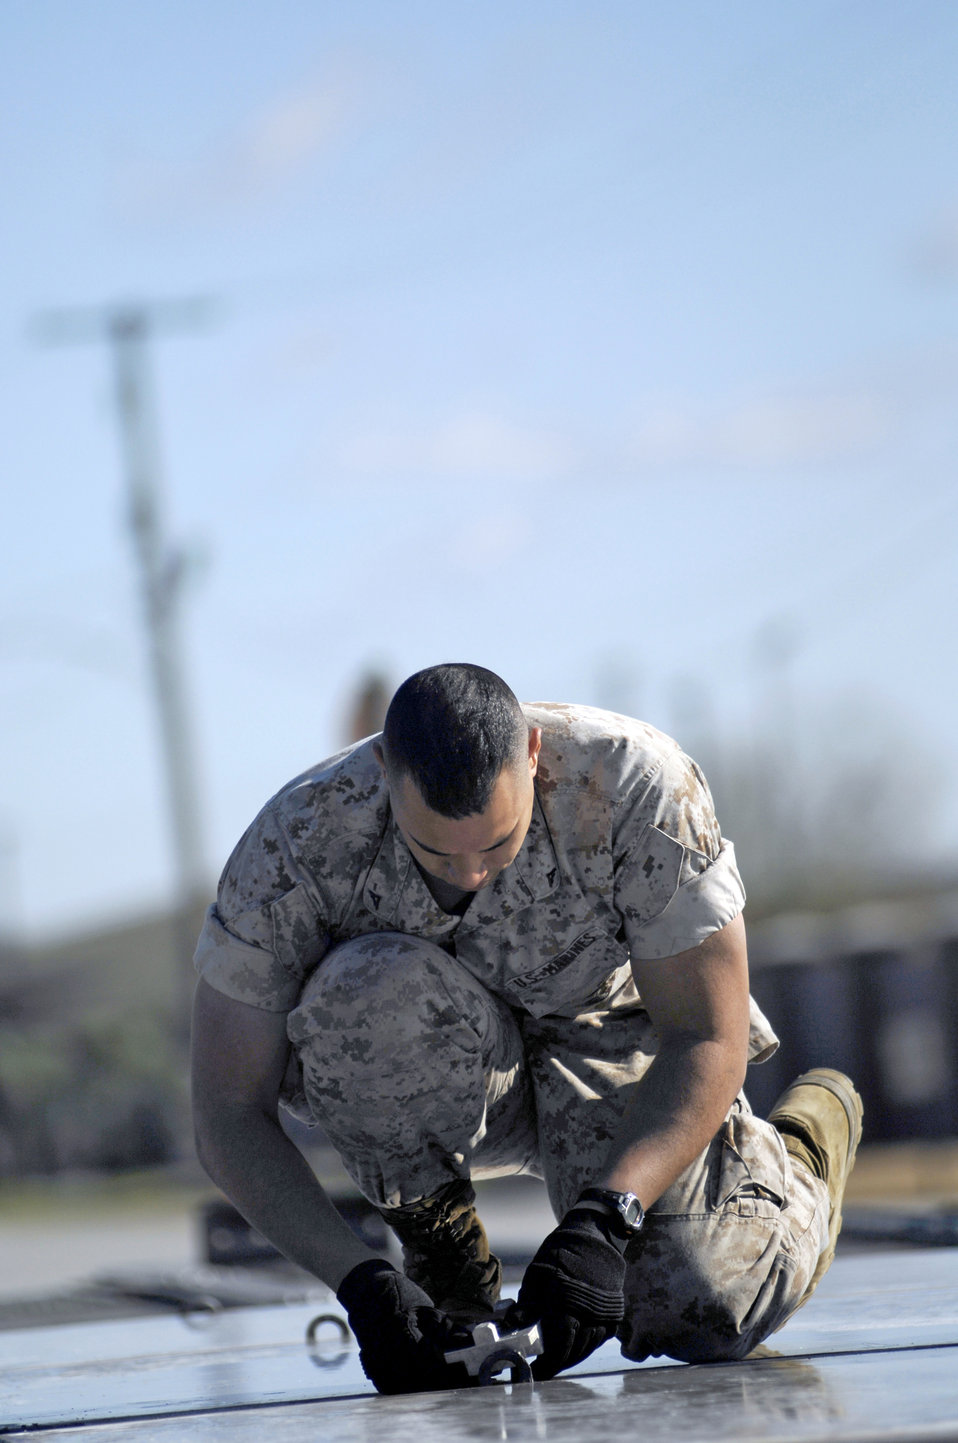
Charleston officials support Operation Enduring Freedom build up

Marine Lance Cpl. Garren Robinson locks two air cargo pallets together in preparation for the loading of a mine-resistant, ambush-protected all-terrain vehicle March 23, 2010, at Joint Base Charleston, S.C. Corporal Garren is with the 4th Marine Logistics Group, 4th Atlanta Support Battalion, Charlie Company.